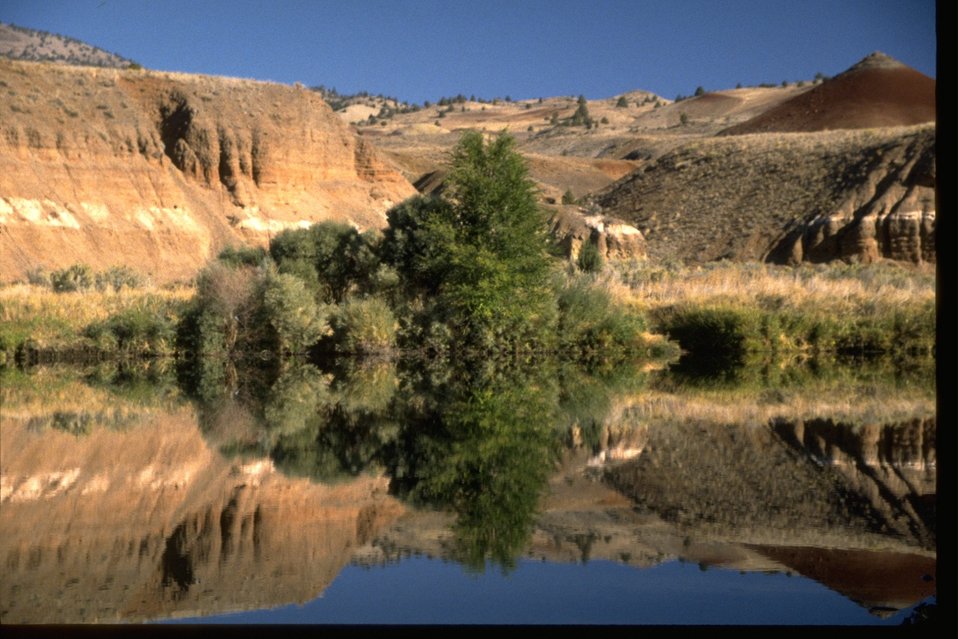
Riparian vegetation along the bank of the John Day River, near Bridge Creek.